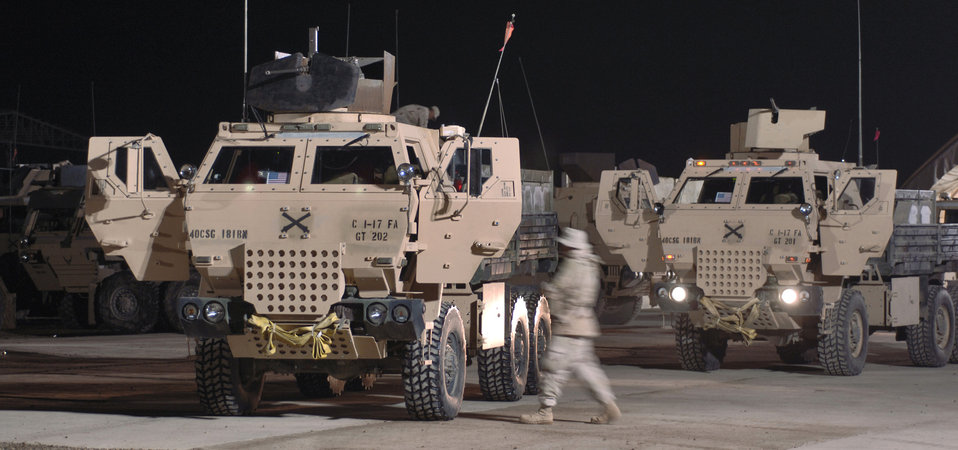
Convoy duty

BALAD AIR BASE, Iraq (AFPN) -- Soldiers with C Battery 1/17 Field Artillery prepare their armor-modified M-1083 medium tactical vehicle during the pre-dawn hours on a January morning. They will escort a 181st Transportation Battalion combat convoy of supplies and mail to a forward operating base in Iraq.